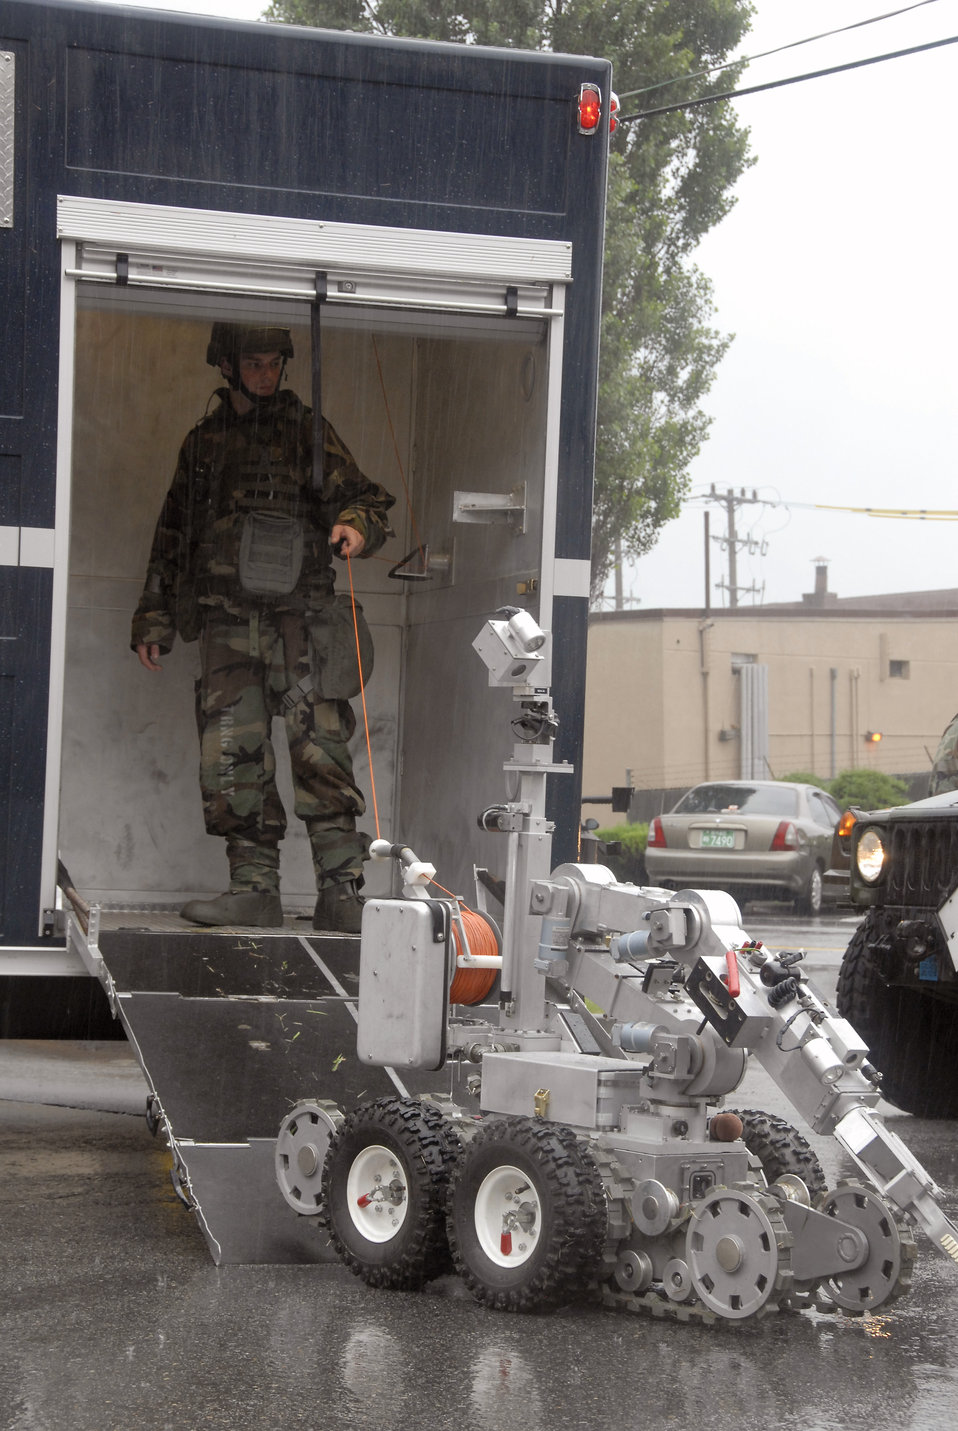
Handle with care

Airman Matthew Morris, an explosive ordnance disposal apprentice for the 51st Civil Engineer Squadron at Osan Air Base, South Korea, guides an F6A robot as it prepares to remove a suspicious package at the base post office July 24 during a base-wide exercise. The robot is equipped with several television cameras for remote viewing and a dexterous arm for hazardous tasks.